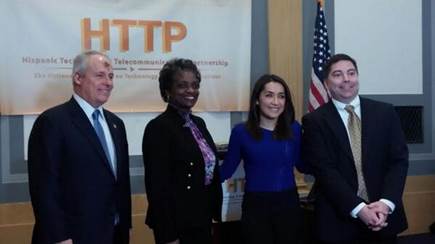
3.5.2014 Hispanic Technology and Telecommunications Partnership (HTTP) relaunch reception

FCC Commissioners O'Rielly and Clyburn at the Hispanic Technology & Telecommunications Partnership (HTTP) relaunch reception March 5, 2014